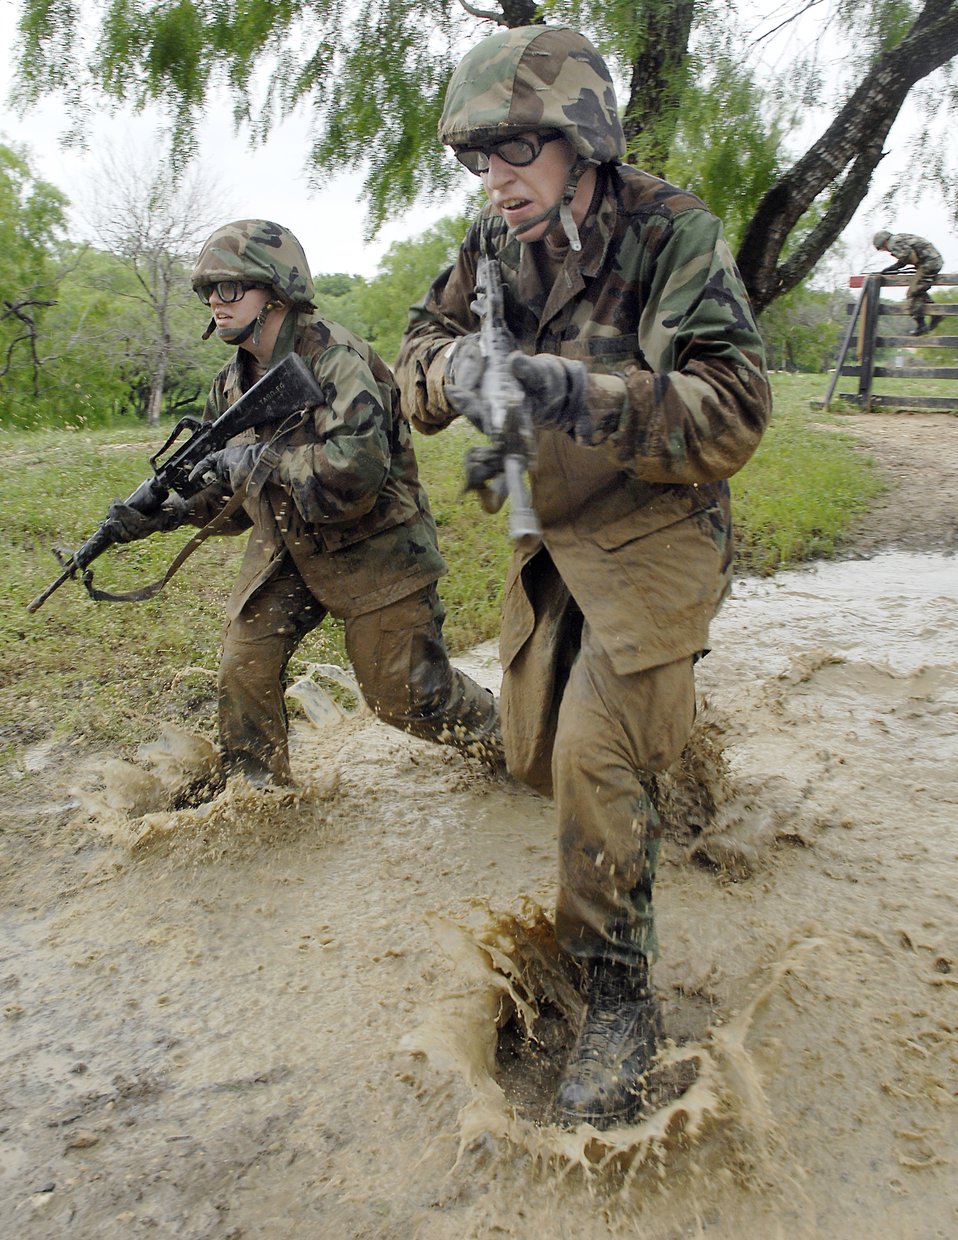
Airmen live, learn warrior ethos

Basic trainees navigate through the tactical assault course at the field training site on Lackland Air Force Base, Texas, on May 2. The half-mile course tests the trainees' newly-acquired defensive tactics skills and enforces the need to properly communicate with their team members.